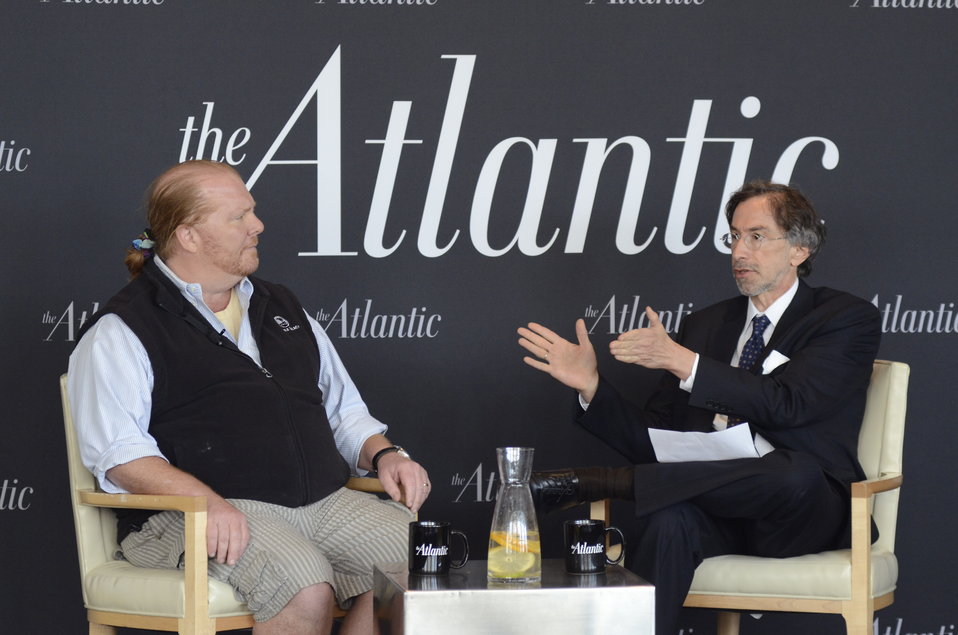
The Atlantic Senior Editor Corby Kummer interviews Chef, restaurateur, author, and television personality Mario Batali at the 3rd Annual Food Summit held at the W Hotel in Washington, D.C. on Thursday, May 24, 2012. The Food Summit event includes interviews, panel discussions and symposia with leading authorities on issues related to food, food security, and nutrition.